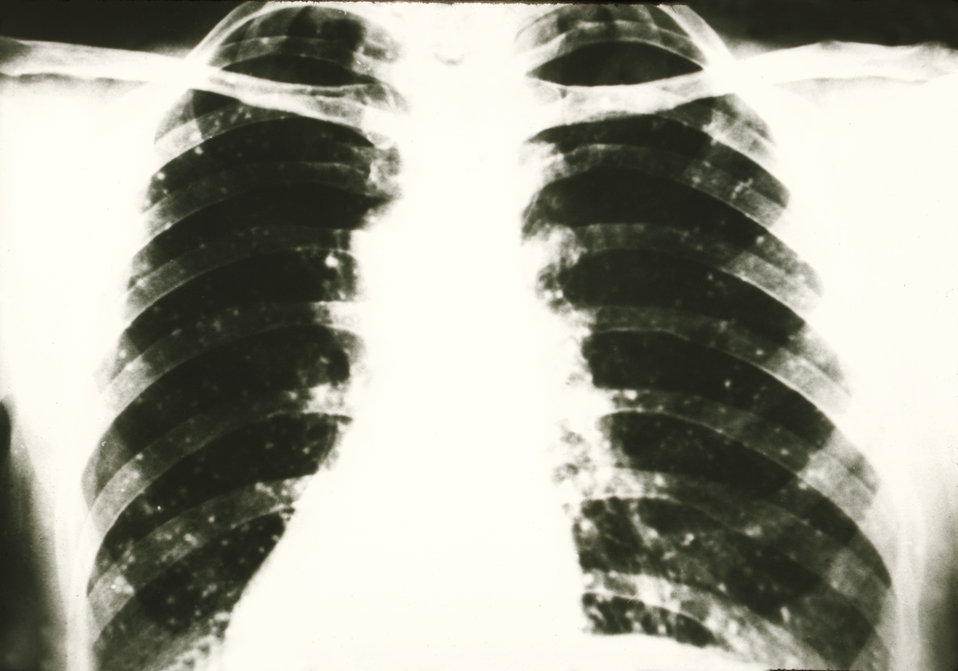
This AP chest radiograph shows signs of histoplasmosis of the lungs due to the fungus Histoplasma capsulatum.